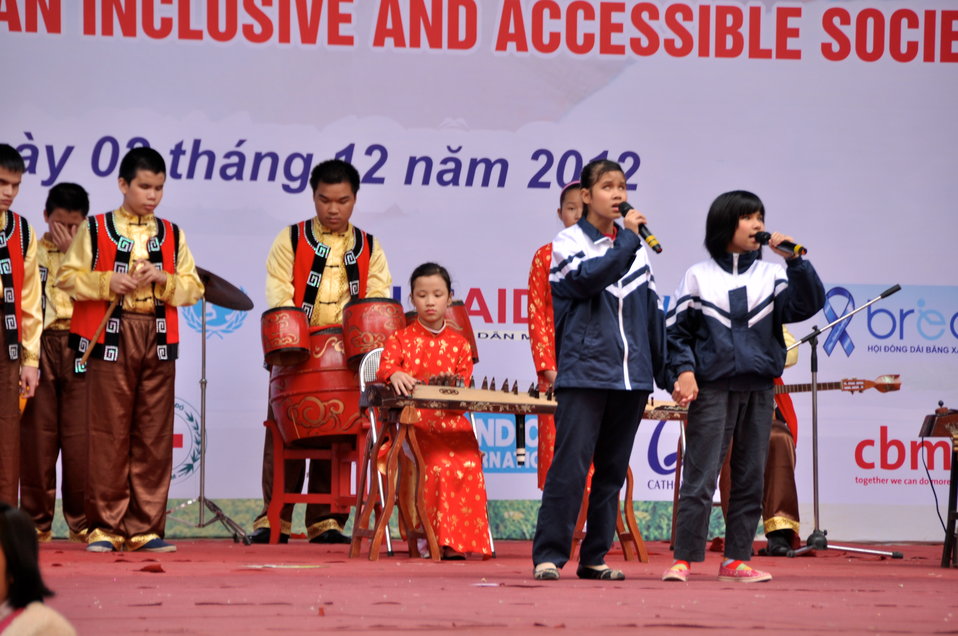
USAID joins celebration of International Day of Persons with Disabilities in Hanoi, Vietnam

December 2, 2012